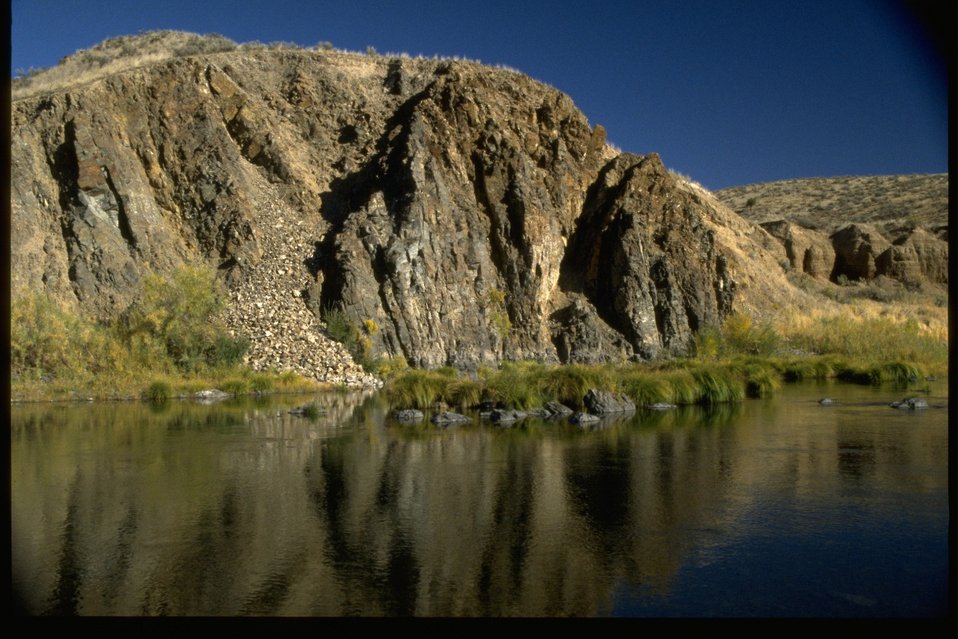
Riparian vegetation along the bank of the John Day River, near Bridge Creek.